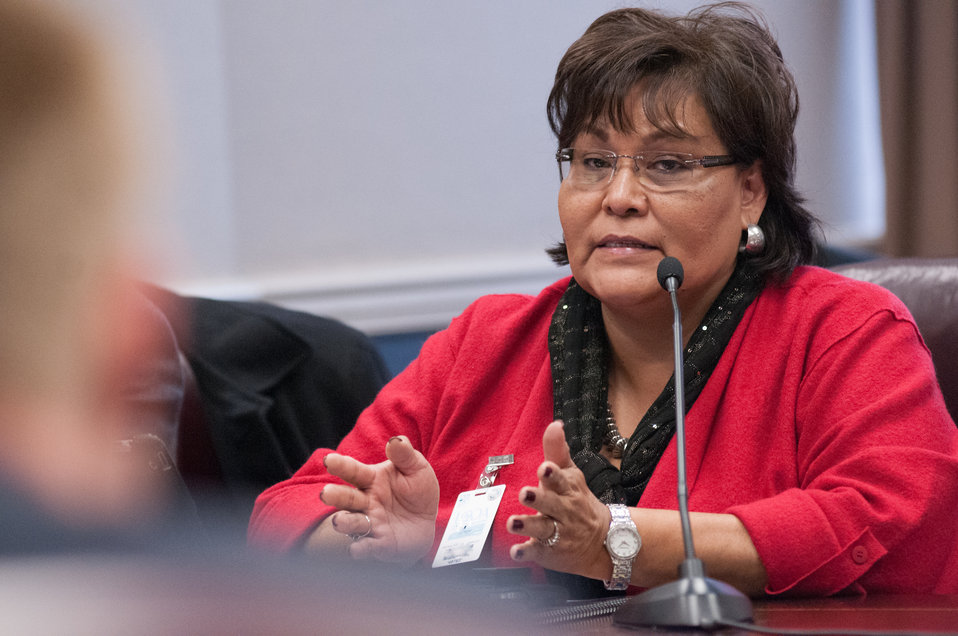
Southwestern Indian Polytechnic Institute President Sherry Allison, Albuquerque, New Mexico, presents some of her college's needs to U.S. Department of Agriculture Senior Advisor to the Secretary on Tribal Relations and Office of Tribal Relations Acting Director Max Finberg, during the USDA and American Indian Higher Education Consortium Leadership Group Winter Meeting, at the USDA Whitten Building, Williamsburg Room, in Washington D.C., on Friday, Feb. 8, 2013.